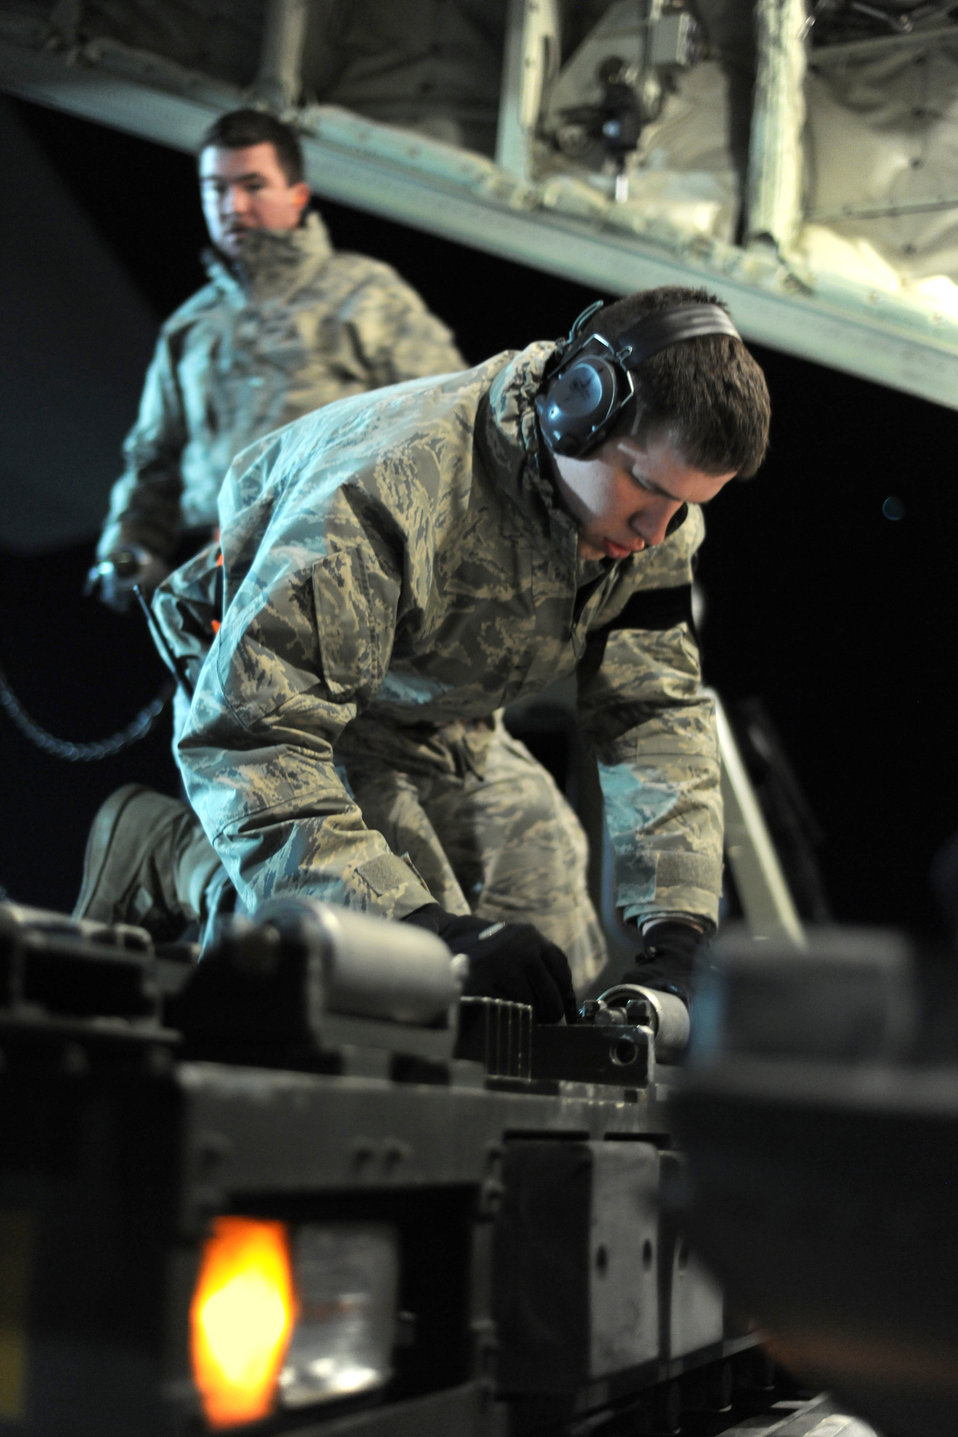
Operation Odyssey Dawn

SPANGDAHLEM AIR BASE, Germany ? An Airman from the 726th Air Mobility Squadron prepares to load cargo onto a C-130J Super Hercules here in support of Operation Odyssey Dawn March 20. Joint Task Force Odyssey Dawn is the U.S. Africa Command task force established to provide operational and tactical command and control of U.S. military forces supporting the international response to the unrest in Libya and enforcement of United Nations Security Council Resolution (UNSCR) 1973. UNSCR 1973 authorizes all necessary measures to protect civilians in Libya under threat of attack by Qadhafi regime forces. JTF Odyssey Dawn is commanded by U.S. Navy Admiral Samuel J. Locklear, III.